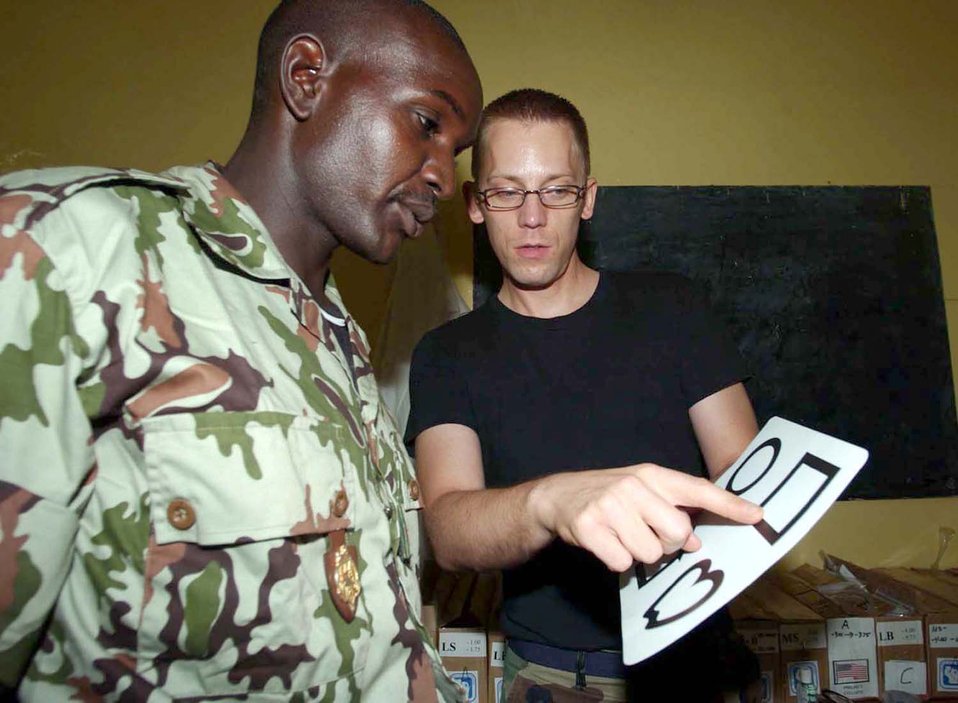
A helping hand

CAMP TONDIBIAH, Niger -- Capt. (Dr.) Steven Tittl reviews shapes on a sight chart with a Nigerian soldier before giving an eye exam here. Dr. Tittl is part of a 12-person Air Force Reserve Command medical team performing a humanitarian mission in Niger. He is from the 439th Aerospace Medicine Squadron at Westover Air Reserve Base, Mass.